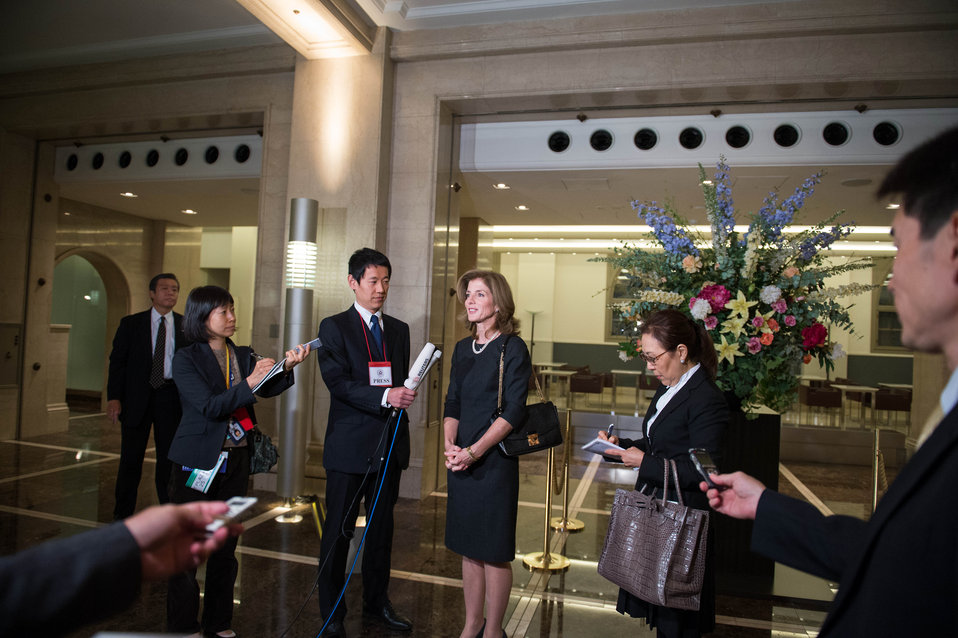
Ambassador Kennedy Speaks After the Presentation of Credentials Ceremony

U.S. Ambassador to Japan Caroline Kennedy speaks after the Ceremony of the Presentation of Credentials in Tokyo, Japan, on November 19, 2013.